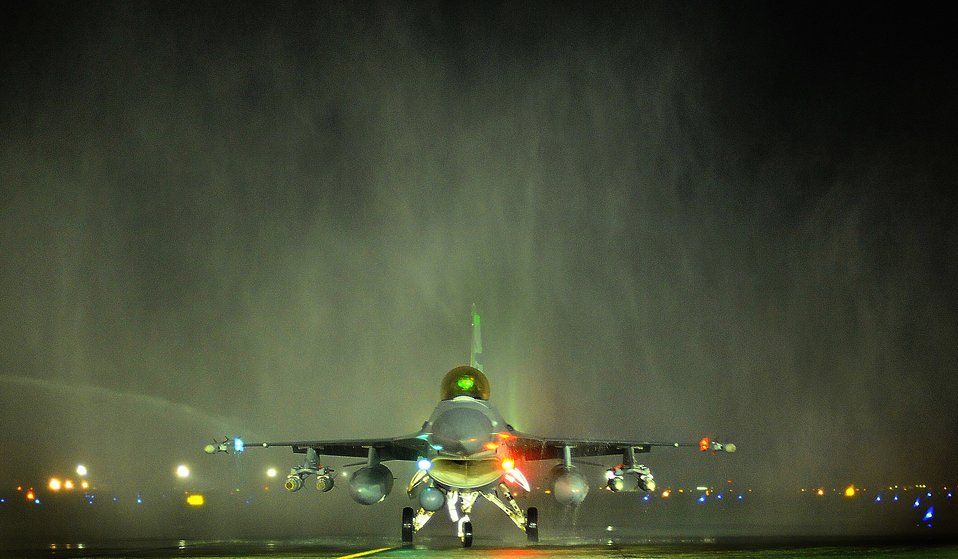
Celebrating a milestone

Col. David Romuald, 332nd Air Expeditionary Operations Group deputy Commander, taxis under the spray of two fire department crash trucks Dec. 2 at Joint Base Balad, Iraq, after he completed his 3,000th flying hour in an F-16 Fighting Falcon. Approximately 150 F-16 pilots have surpassed this milestone.